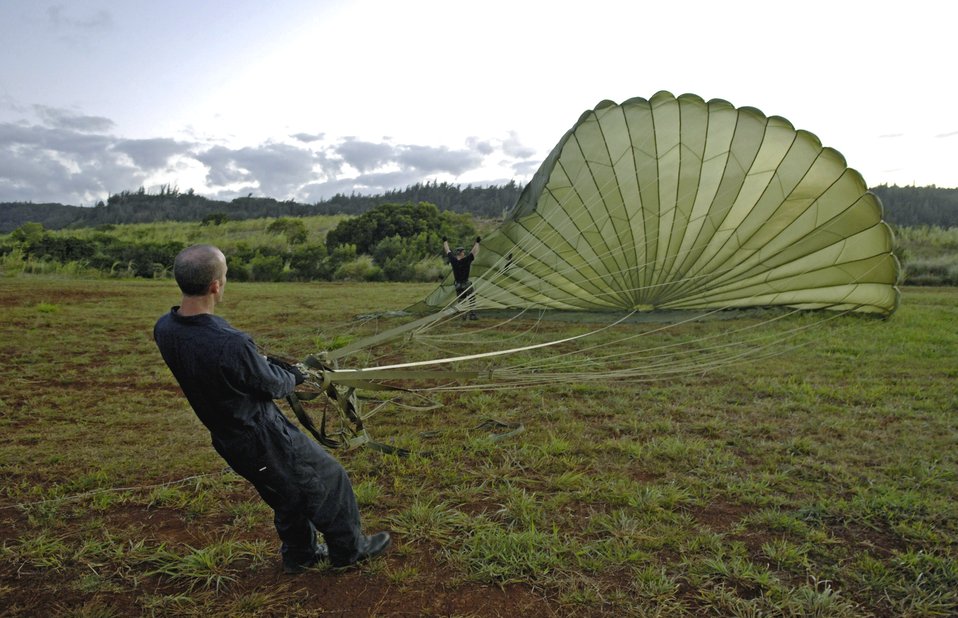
Load 'em up, drop 'em out

Tech. Sgt. Ralph Plummer and Staff Sgt. Robert Ward collect a parachute from a practice airdrop bundle which was dropped from a C-17 Globemaster III June 11 at the Kahuku Training Range in Hawaii. The C-17s, from the 535th Airlift Squadron at Hickam Air Force Base, are conducting their quarterly airdrop qualifications. The Airmen are air transportation specialist from the 15th Logistics Readiness Squadron Combat Mobility Element.